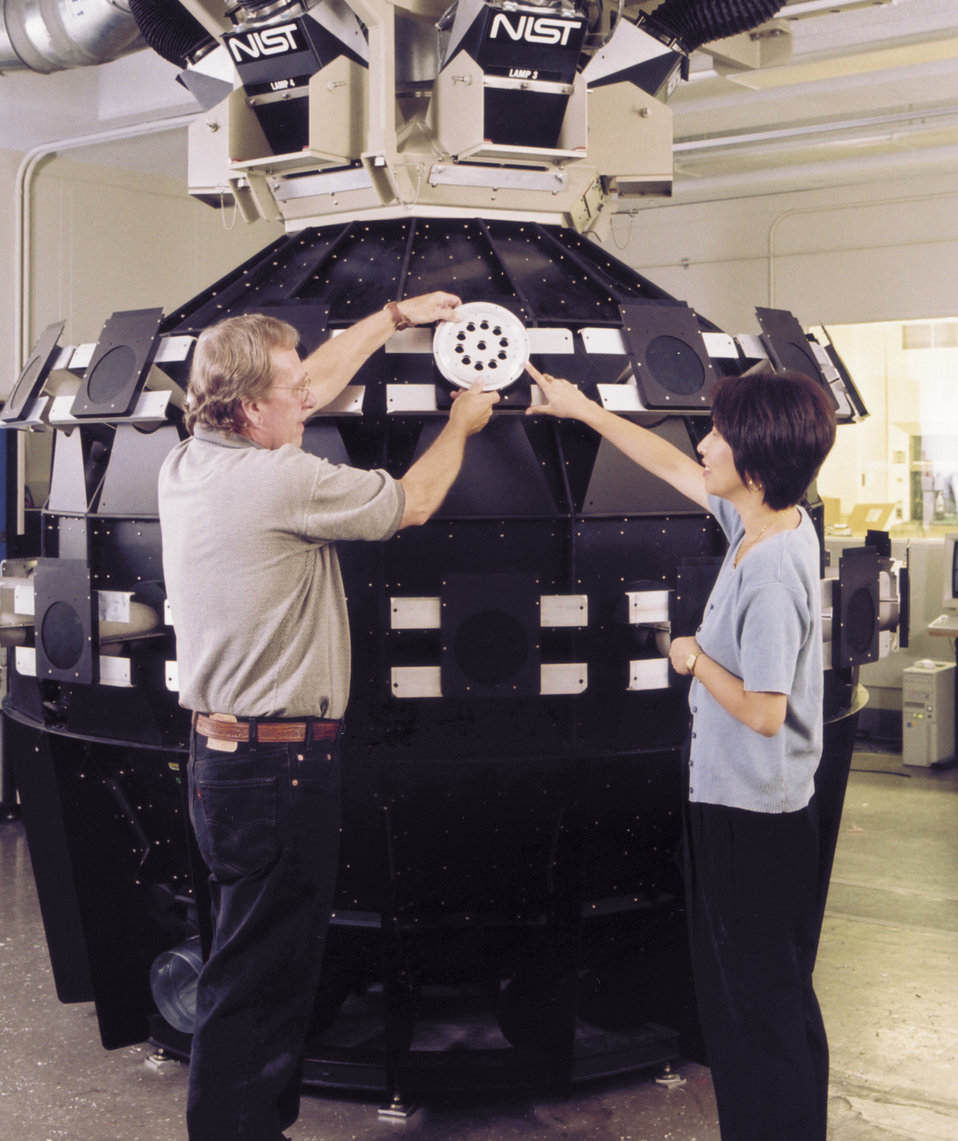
SPHERE

Weather SPHERE: Researchers from France's National Scientific and Technological Institute and NIST will work together to learn more about the effect of weathering on fiber-reinforced polymer composites that may be used in bridges and piers. The NIST's SPHERE (Simulated Photodegradation via High Energy Radiant Emission) accelerates outdoor weathering of test materials.